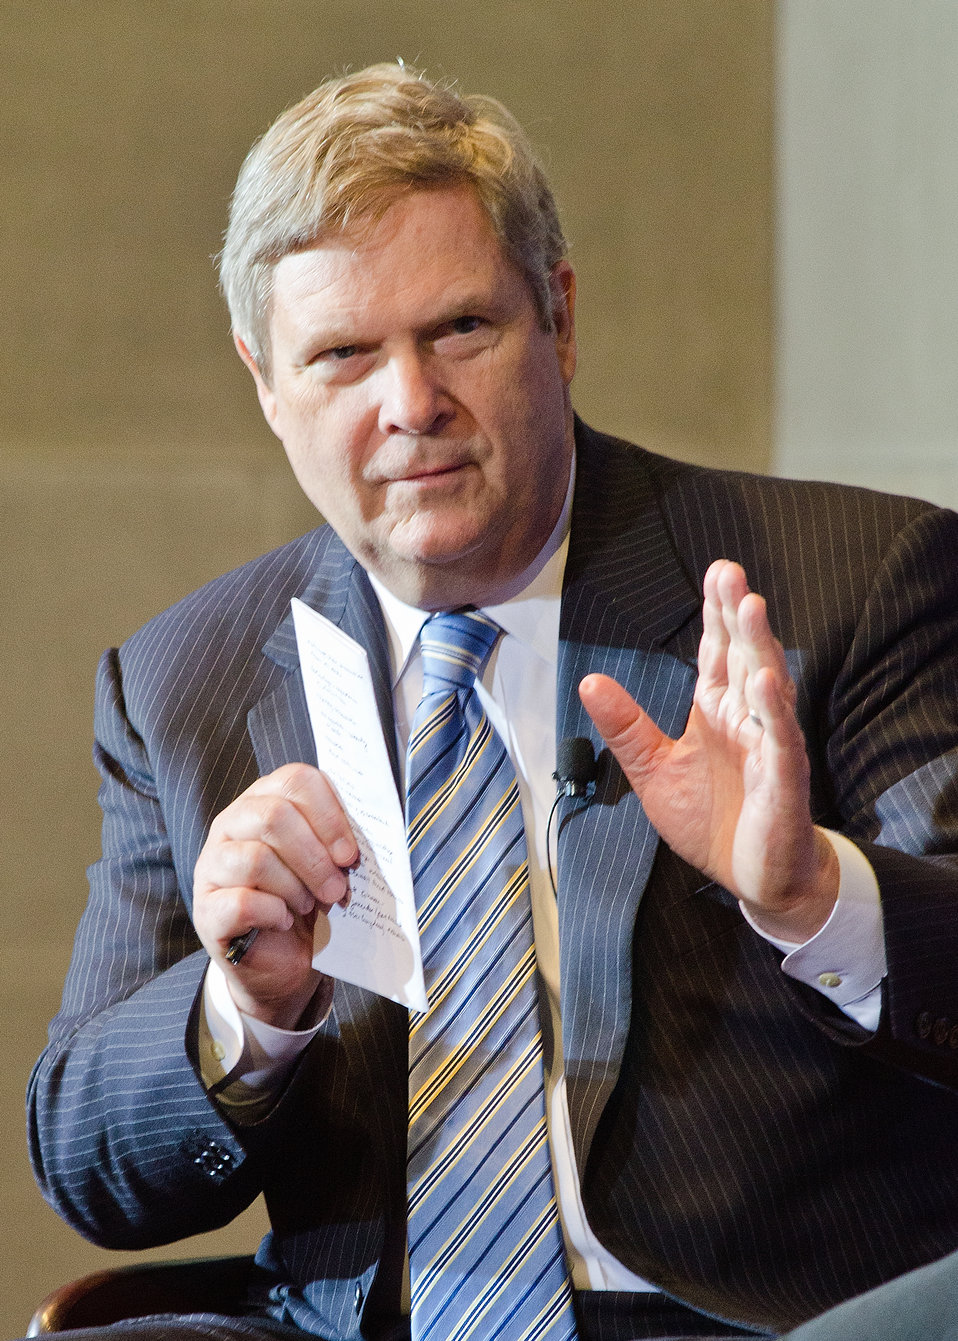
Agriculture Secretary Tom Vilsack was the moderator on the panel “Conserving Rural Lands: New Models for Working Lands and Wildlife” at the White House Conservation Conference, “Growing America’s Outdoor Heritage and Economy” at Interior Department, Yates Auditorium in Washington, D.C., on Friday, March 2, 2012 The conference waspart of President Barrack Obama’s, “America’s Great Outdoors Initiative” to spotlight community-driven conservation efforts and discussed how to build their success.